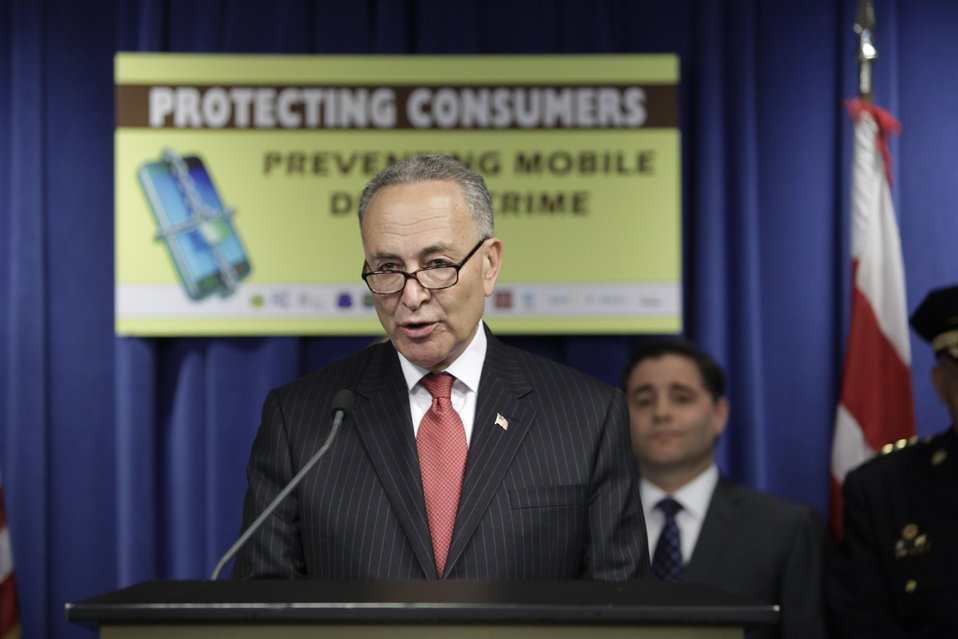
Senator (D-NY) Charles E. Schumer speaks in support and announcing a new legislation to protect consumers from data and smartphone theft at the John A. Wilson Building in Washington, DC on April 10, 2012.